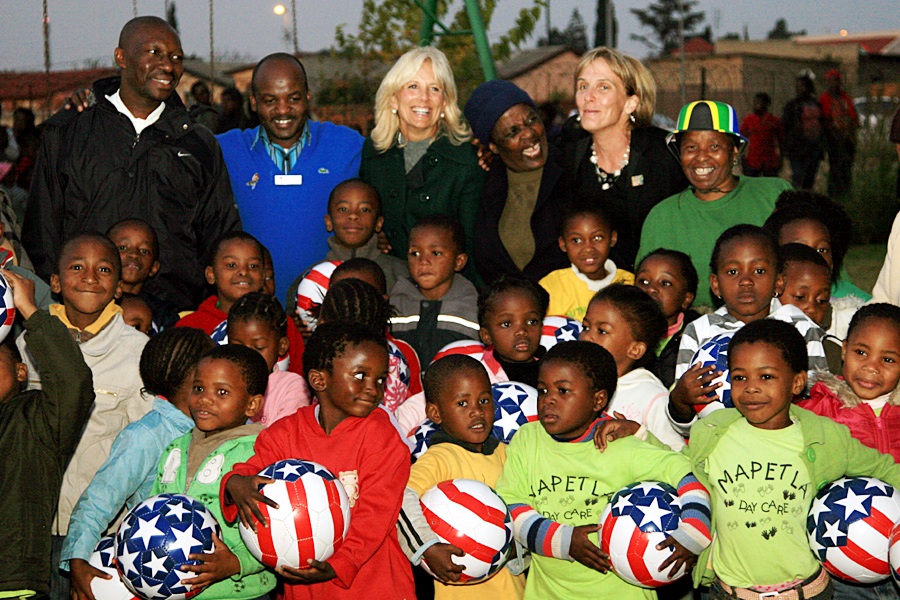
Dr. Jill Biden and Liz Berry Gips With Mapetla Staff and Children

Dr. Jill Biden, wife of Vice President Joseph Biden, and Liz Berry Gips, wife of U.S. Ambassador to the South Africa Donald H. Gips, pose for a photo with South African children and Mapetla Day Care staff during their visit to the Mapetla Day Care Centre in Soweto, Johannesburg, South Africa, on June 10, 2010.